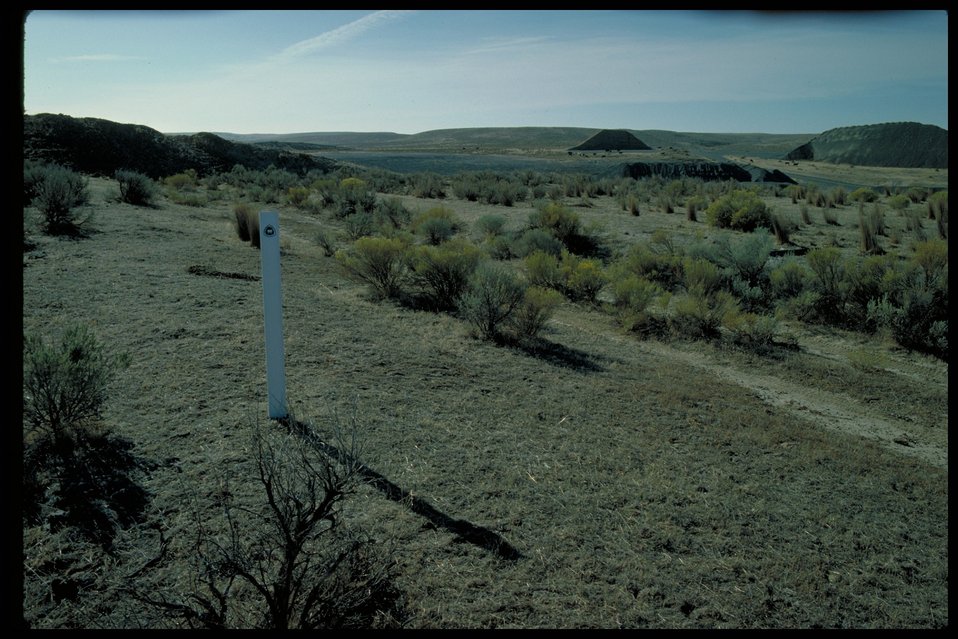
Gravel Pit across Oregon Trail south of Three Island Oregon Trail Lower Snake River District